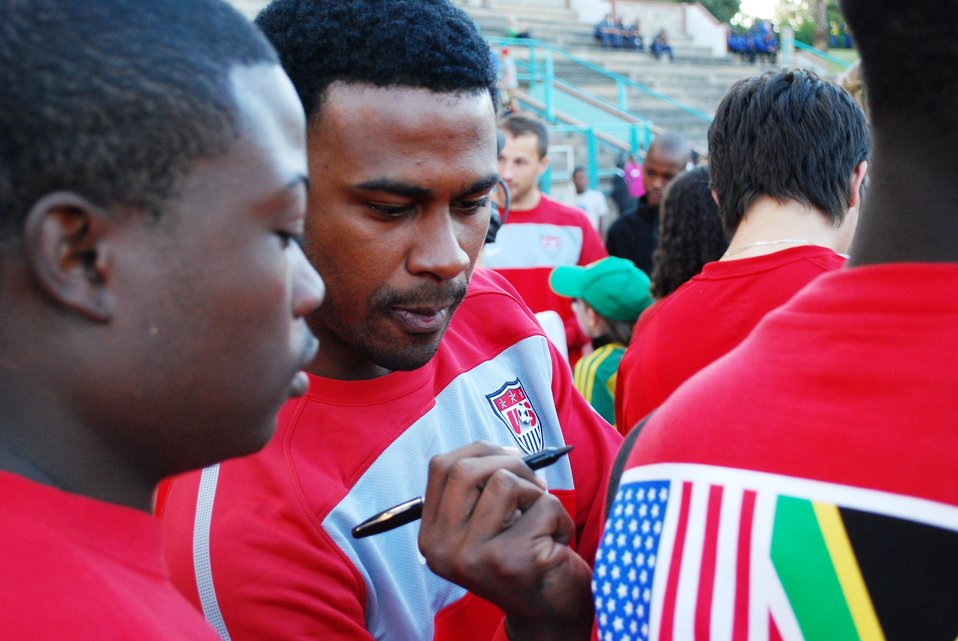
Robbie Findley signs autographs at the U.S. National Soccer Team's open practice session with South African students and U.S. Mission to South Africa families at the Pliditch Stadium in Pretoria, South Africa, on June 6, 2010. The U.S. National Soccer Team is preparing for the 2010 World Cup in South Africa.